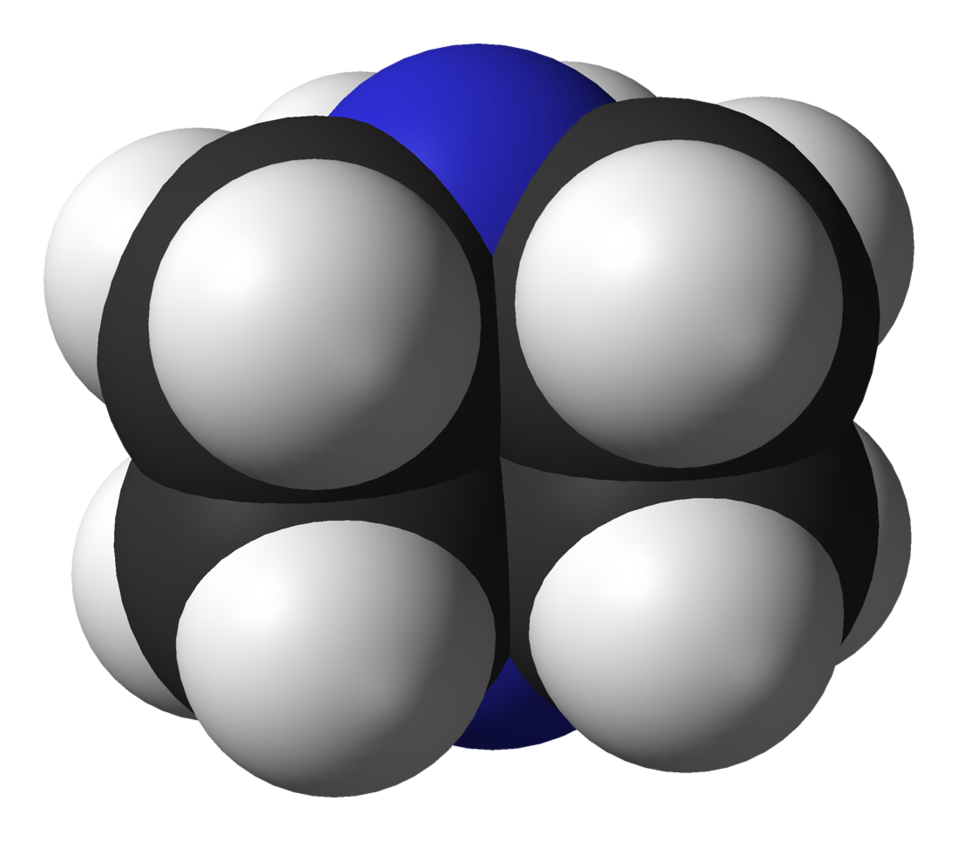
Space-filling model of the 1,4-diazabicyclo[2.2.2]octane (DABCO) molecule